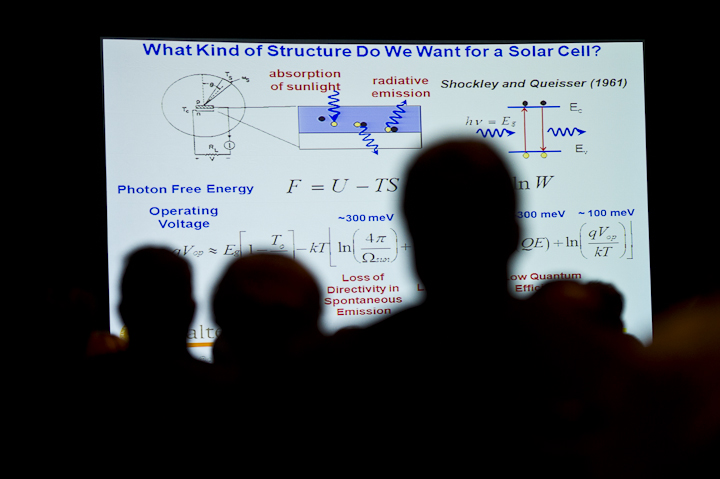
SunShot Solar Cell

June 13, 2012- The audience listens to a presentation by Harry Atwater, Howard Hughes Professor during the plenary session of the SunShot Grand Challenge Summit and Technology Forum in Denver, Colorado.